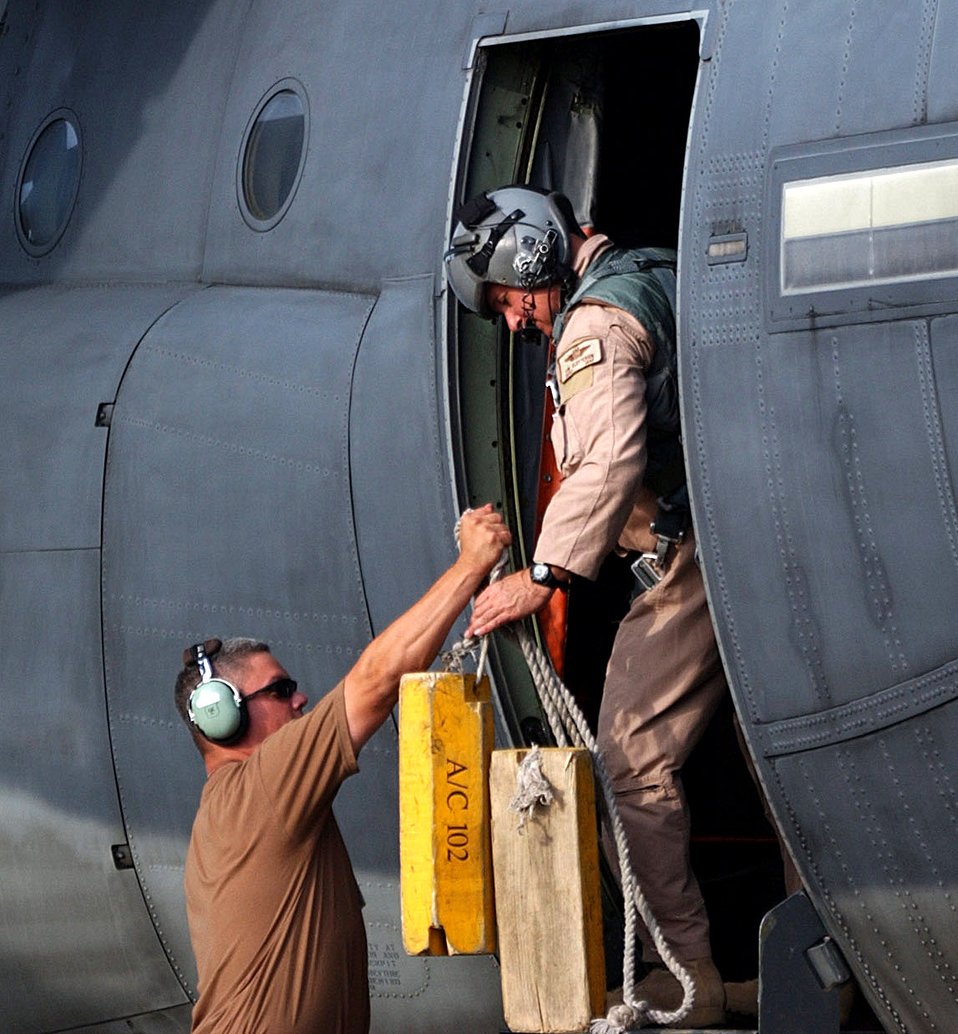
Guardsmen train during CJTF-HOA

DJIBOUTI, Africa (AFPN) -- New York Air National Guardsmen Staff Sgt. Jason Rogers hands the chalks to their HC-130 aircraft to Chief Master Sgt. Tom Elefterion before a Combined Joint Task Force-Horn of Africa mission. Sergeant Rogers is a crewchief with the 449th Expeditionary Rescue Squadron and Chief Elefterion is an HC-130 loadmaster superintendent also assigned to the 449th ERQS. The Guardsmen are from the 102nd Rescue Squadron, the oldest ANG unit. While deployed to Djibouti, Africa, the unit performed pararescue drops, air refueling for Marine CH-53s and stayed on alert to recover any downed servicemembers.